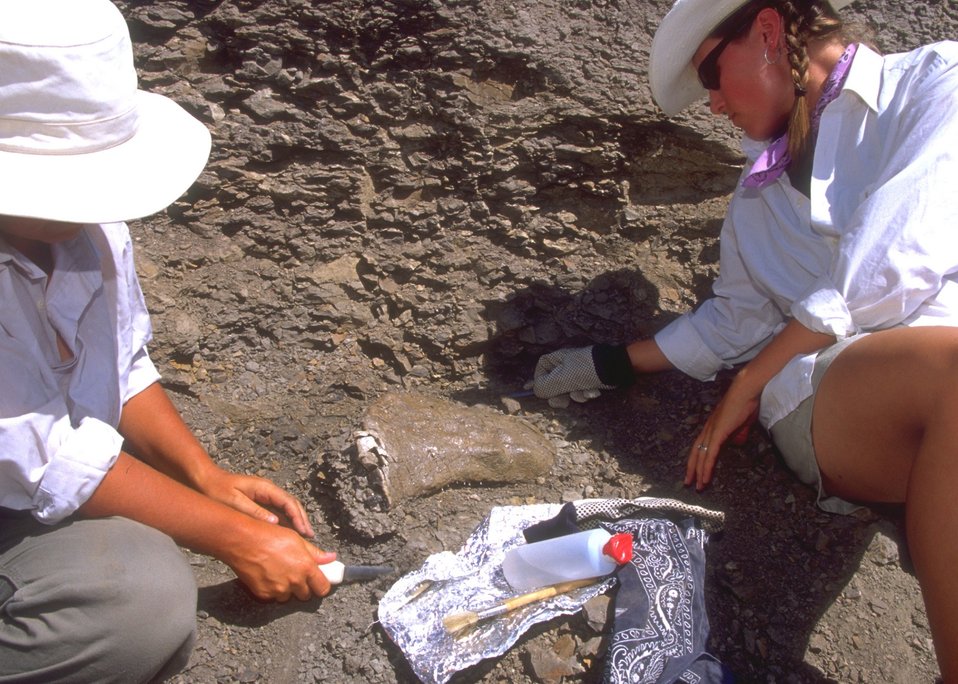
Paleontologist working a dig for dinosaur bones, Lance Creek Fossil Area, Newcastle Field Office.